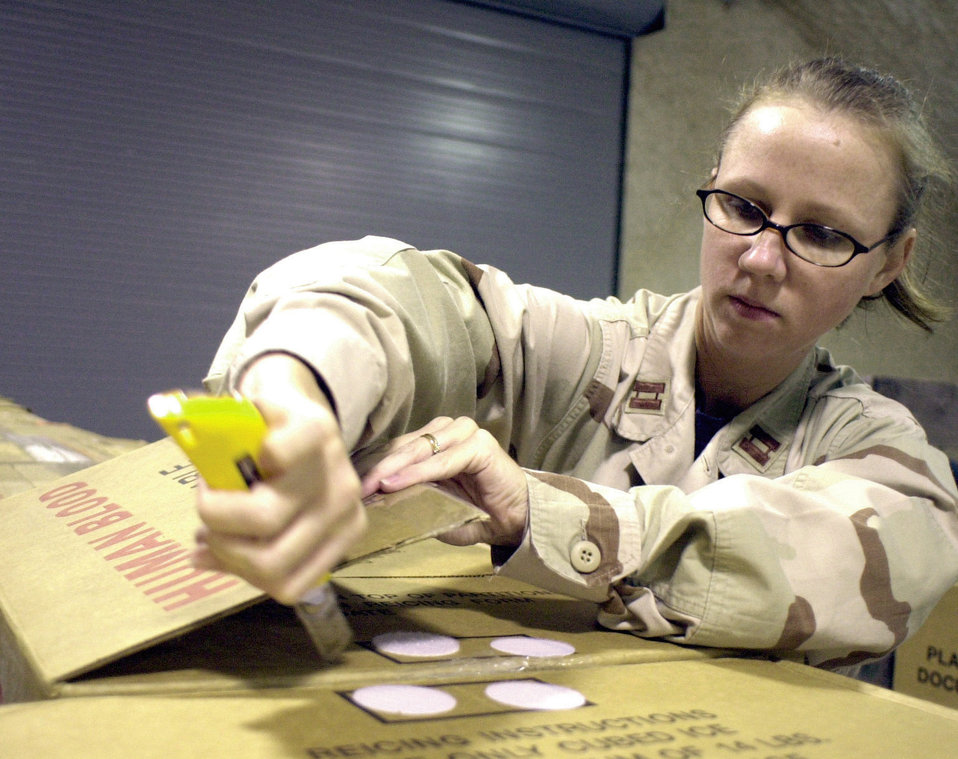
Blood transfer center essential to mission

SOUTHWEST ASIA -- Capt. Jessica Fritz cuts open a box of red blood cells from a shipment. She is the officer in charge of the blood transshipment center at a forward-deployed location here.